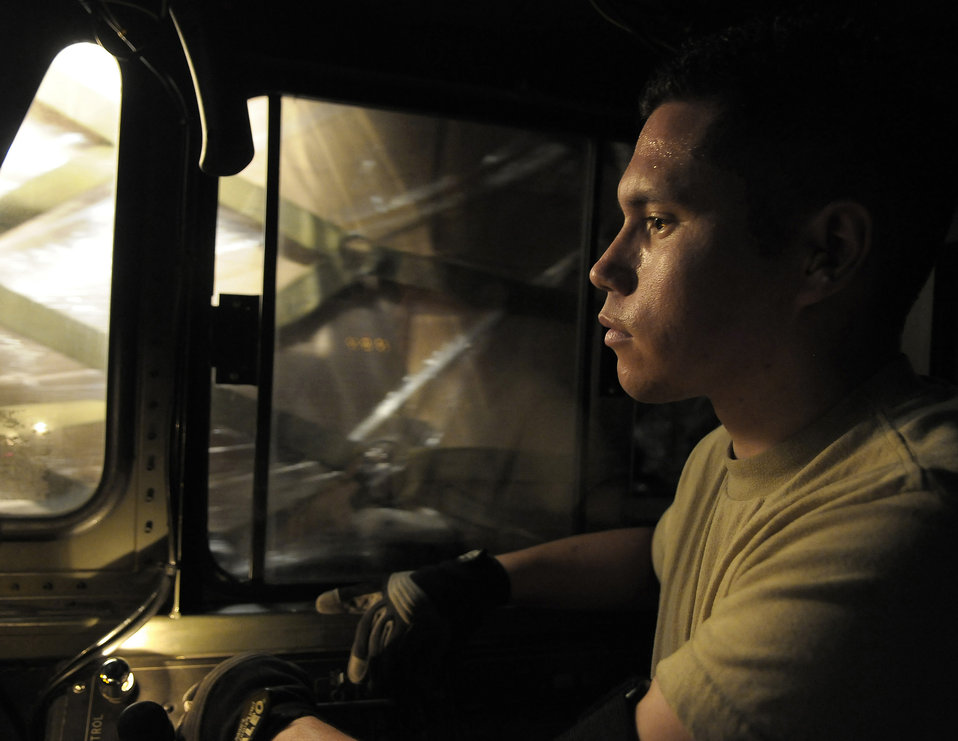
Airmen deliver 30,000 H1N1 prevention kits to South America

Airman Rodrigo Maranon drives a 60K loader with pallets of personal protection kits at Charleston Air Force Base, S.C., May 8. The personal protection kits were shipped to Haiti, El Salvador, Guatemala, Honduras and Nicaragua. The mission was flown by Airmen from the 437th Airlift Wing at Charleston AFB, with command and control oversight provided by the 618th Tanker Airlift Control Center at Scott AFB, Ill.